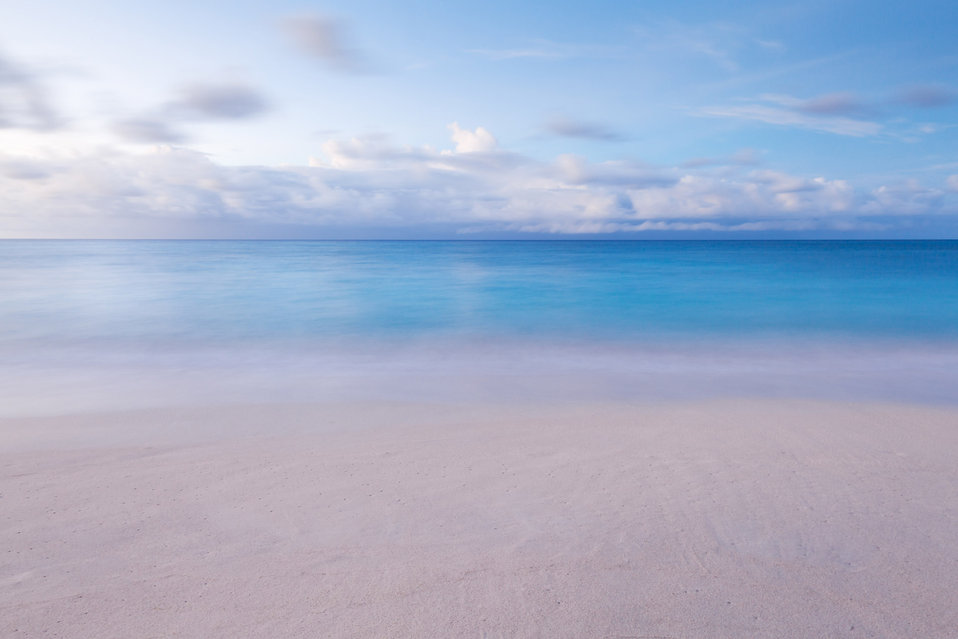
Beach background

Beach with blurred waves and sky in the morning.